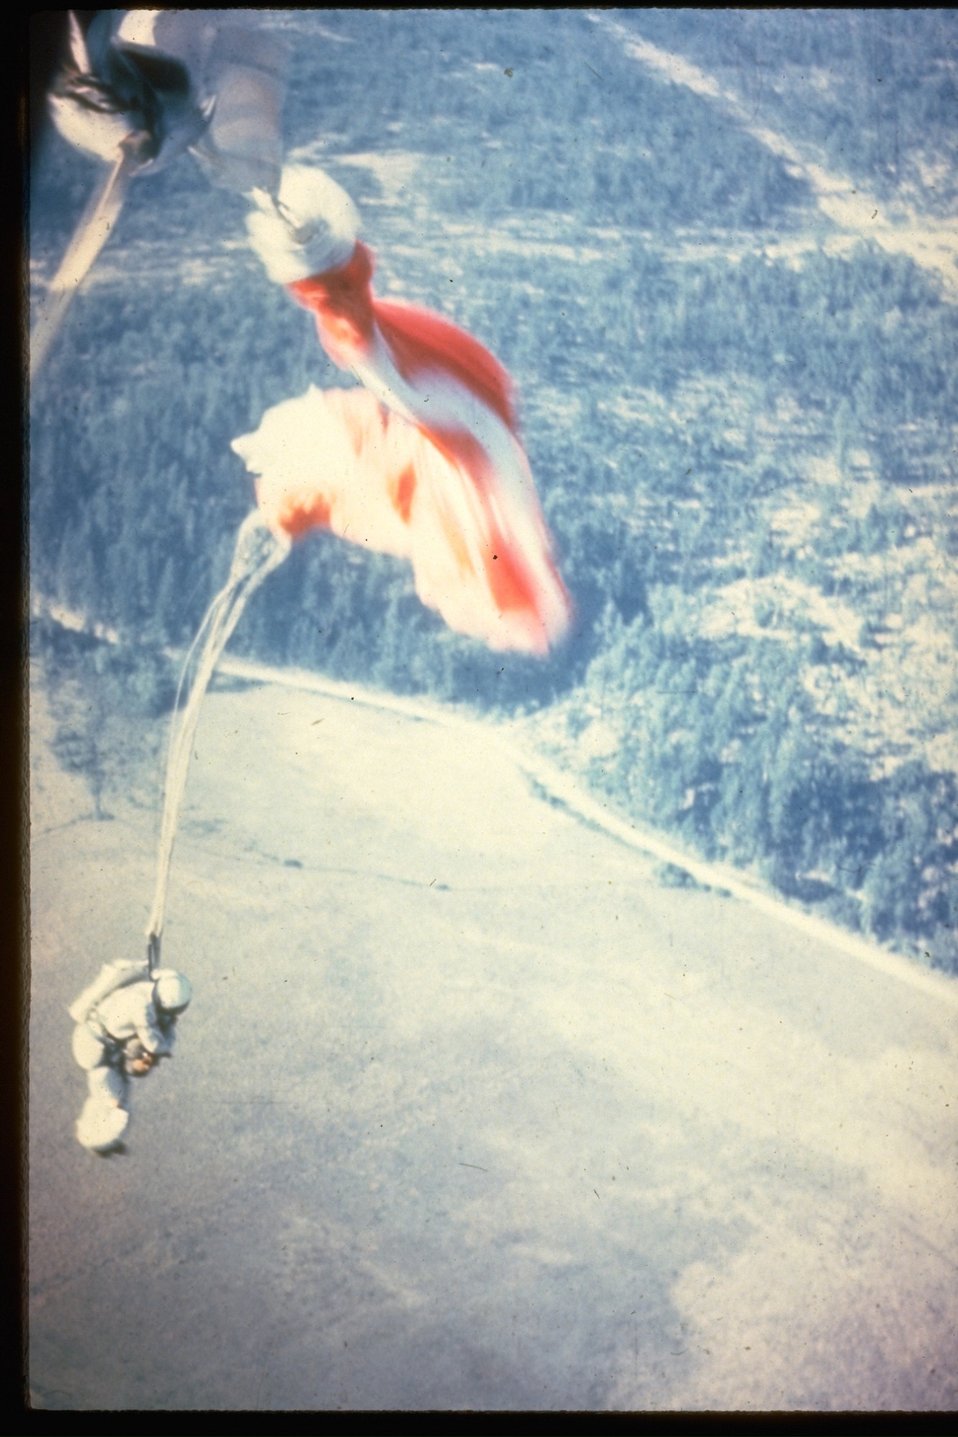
Smoke Jumper.